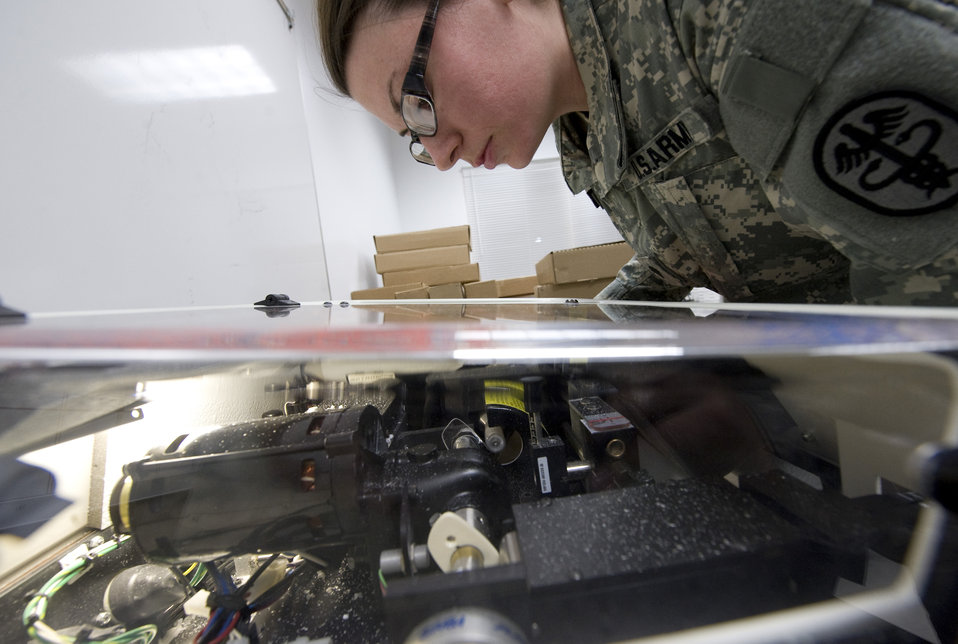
New Vision

Army Spc. Alisha Weatherby uses a Horizon II edger to cut a new eyeglass lens during Operation Arctic Care April 12, 2010, in Kotzebue, Alaska. Specialist Weatherby is an optical lab specialist from the Naval Ophthalmic Support and Training Activity in Yorktown, Va.